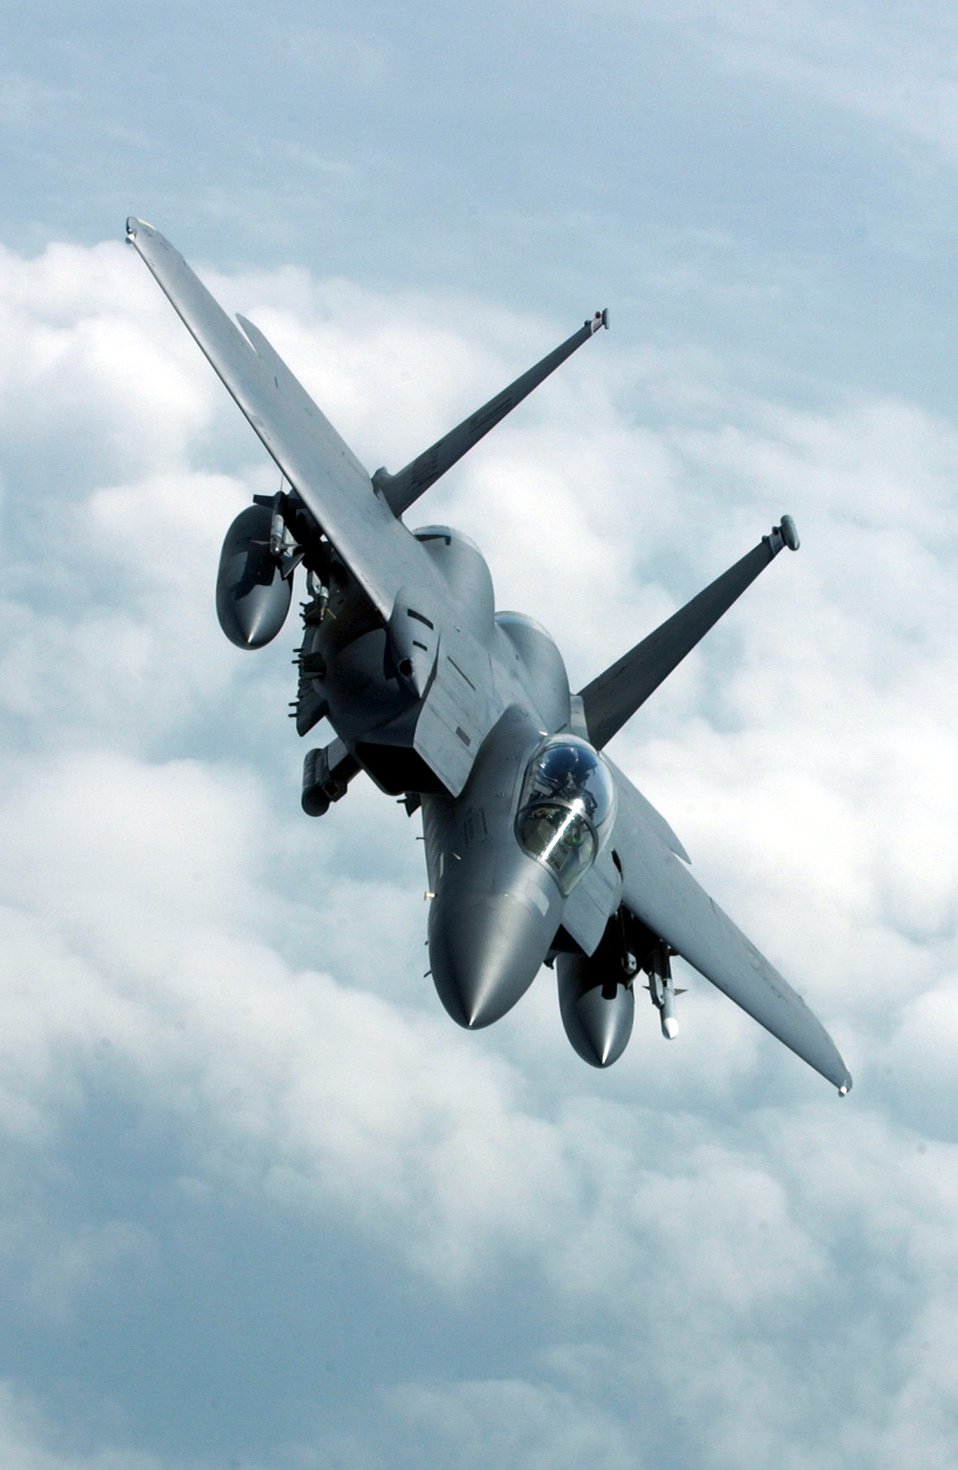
Eagle on a mission

OVER THE NORTH SEA -- An F-15E Strike Eagle from the 494th Fighter Squadron at Royal Air Force Lakenheath, England, flies during a training mission here July 19.